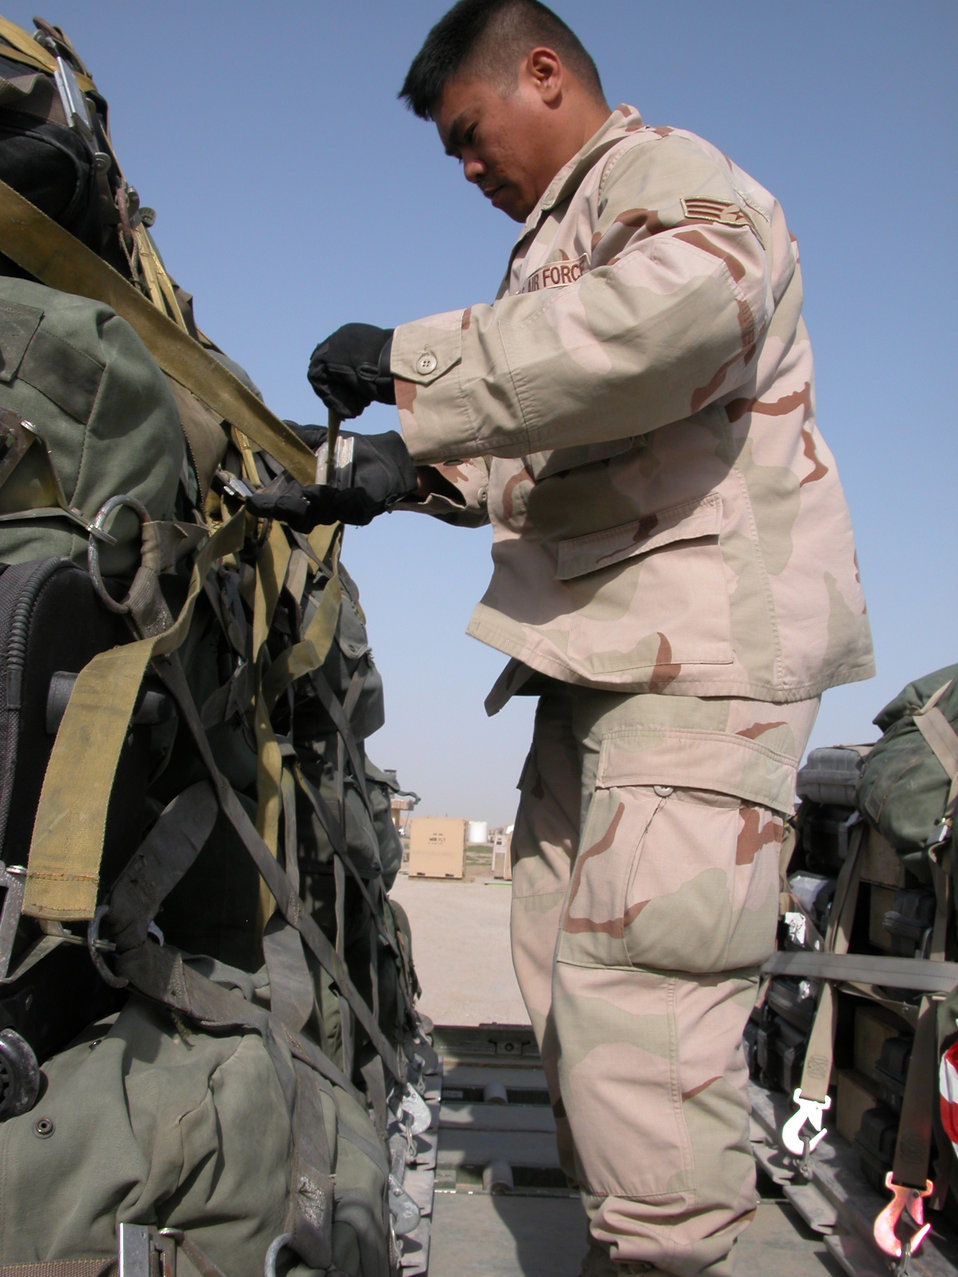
Packing out

TALLIL AIR BASE, Iraq -- Senior Airman Timothy Abiera tightens down baggage on a pallet before it is loaded onto an aircraft March 10. Air transportation Airmen have been moving people in and out of the base as the Air Force's air and space expeditionary force rotation hits full swing. Airman Abiera is an air transportation journeyman deployed here from Charleston Air Force Base, S.C.